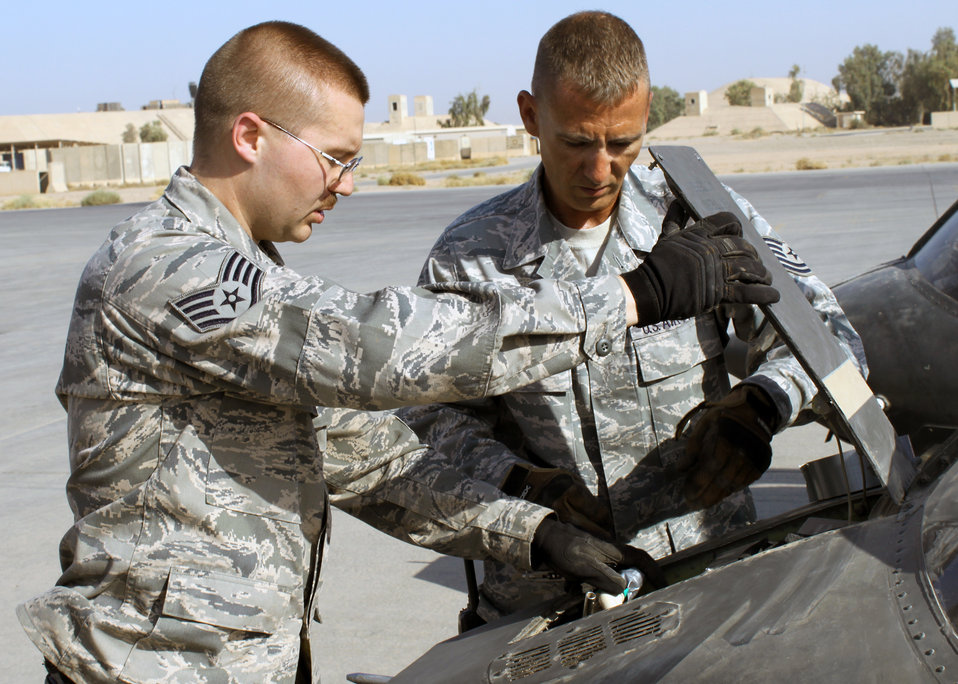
Balad Airmen move helicopters

Staff Sgt. Ryan Hockerlotz (left) and Tech. Sgt. James Dupuis disconnect the battery of an Army OH-58 Kiowa helicopter during transport preparation July 15, 2010, at Joint Base Balad, Iraq. Sergeants Hockerlotz and Dupuis are from the 332nd Expeditionary Logistics Readiness Squadron.